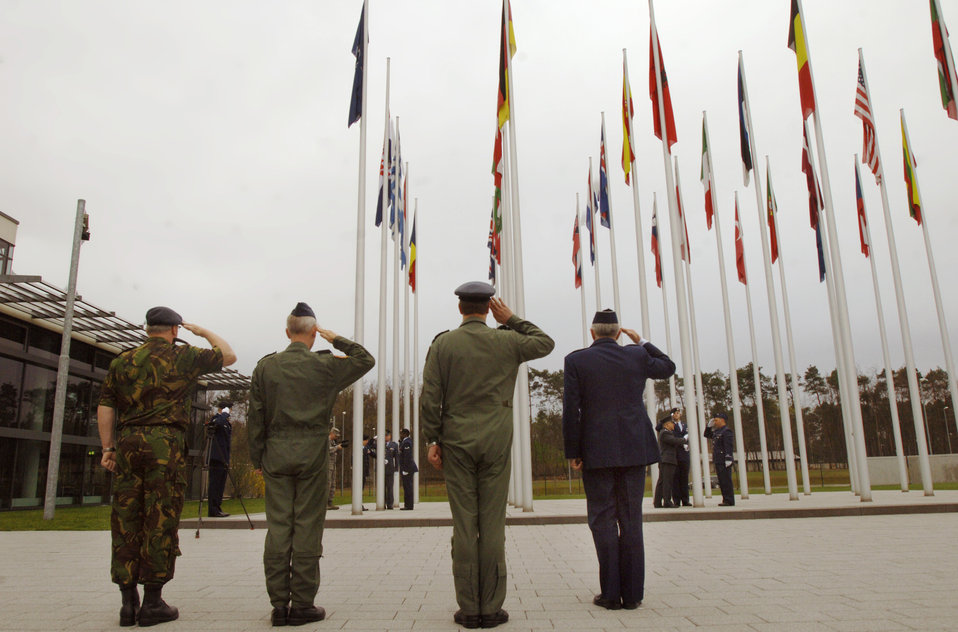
NATO ceremony

NATO Allied Air Component Command officials at Ramstein Air Base, Germany, salute during a flag ceremony April 8 marking the accession of Croatia and Albania as the 27th and 28th members of the alliance. Shown are (l to r) Warrant Officer Tim van der Loght, AACC's senior noncommissioned officer; Maj. Gen. Jon Abma, AACC's chief of staff; Air Marshal David Walker, AACC deputy commander; and Gen. Roger A. Brady, commander of U.S. Air Forces in Europe and AACC.